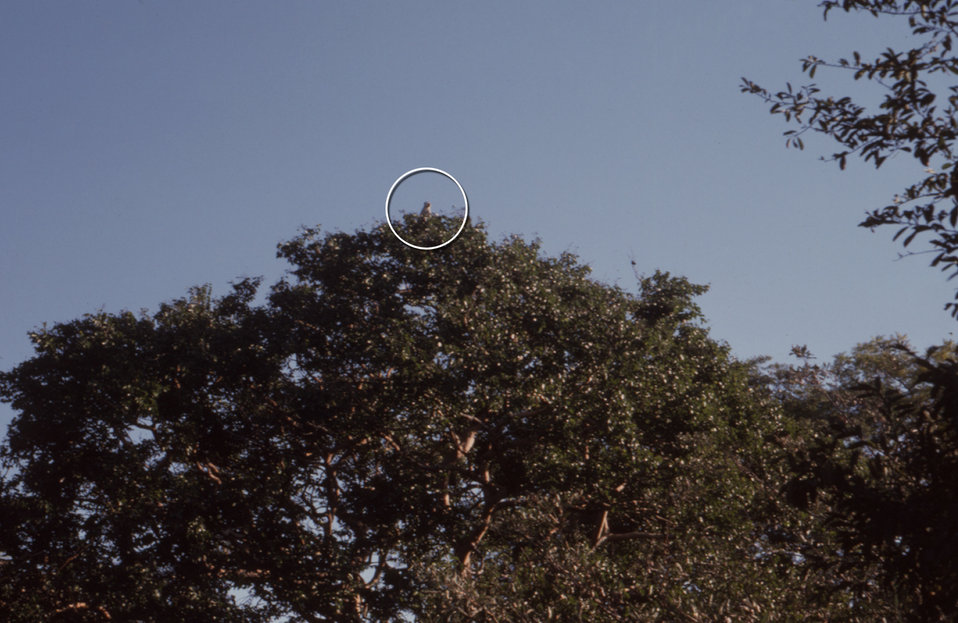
Photographed here, in the Rhodesian (now Zimbabwean) tree tops, is a Cercopithecus aethiops, also known as green, or vervet monkey.